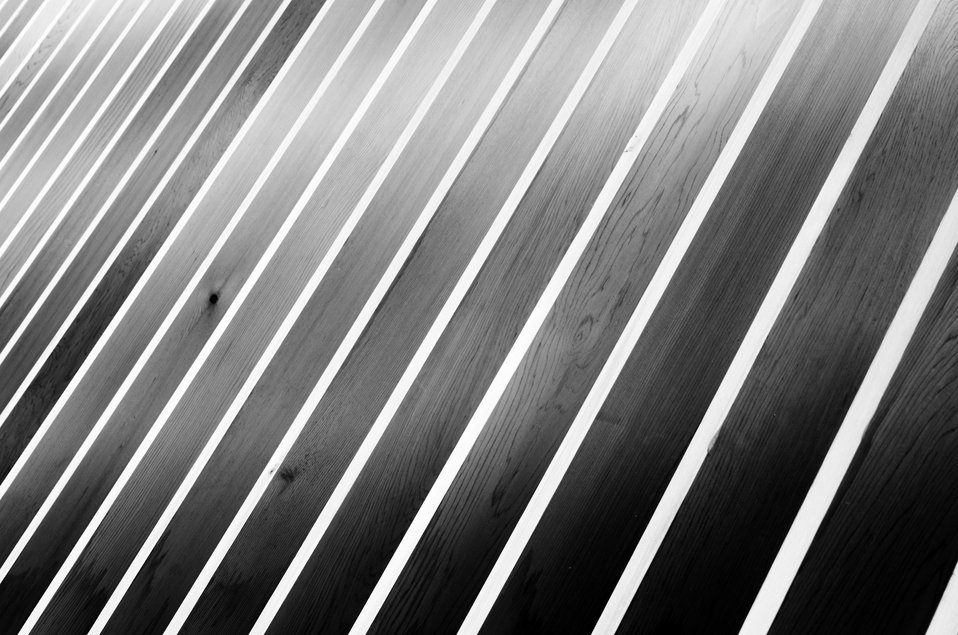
Wood planks - background.